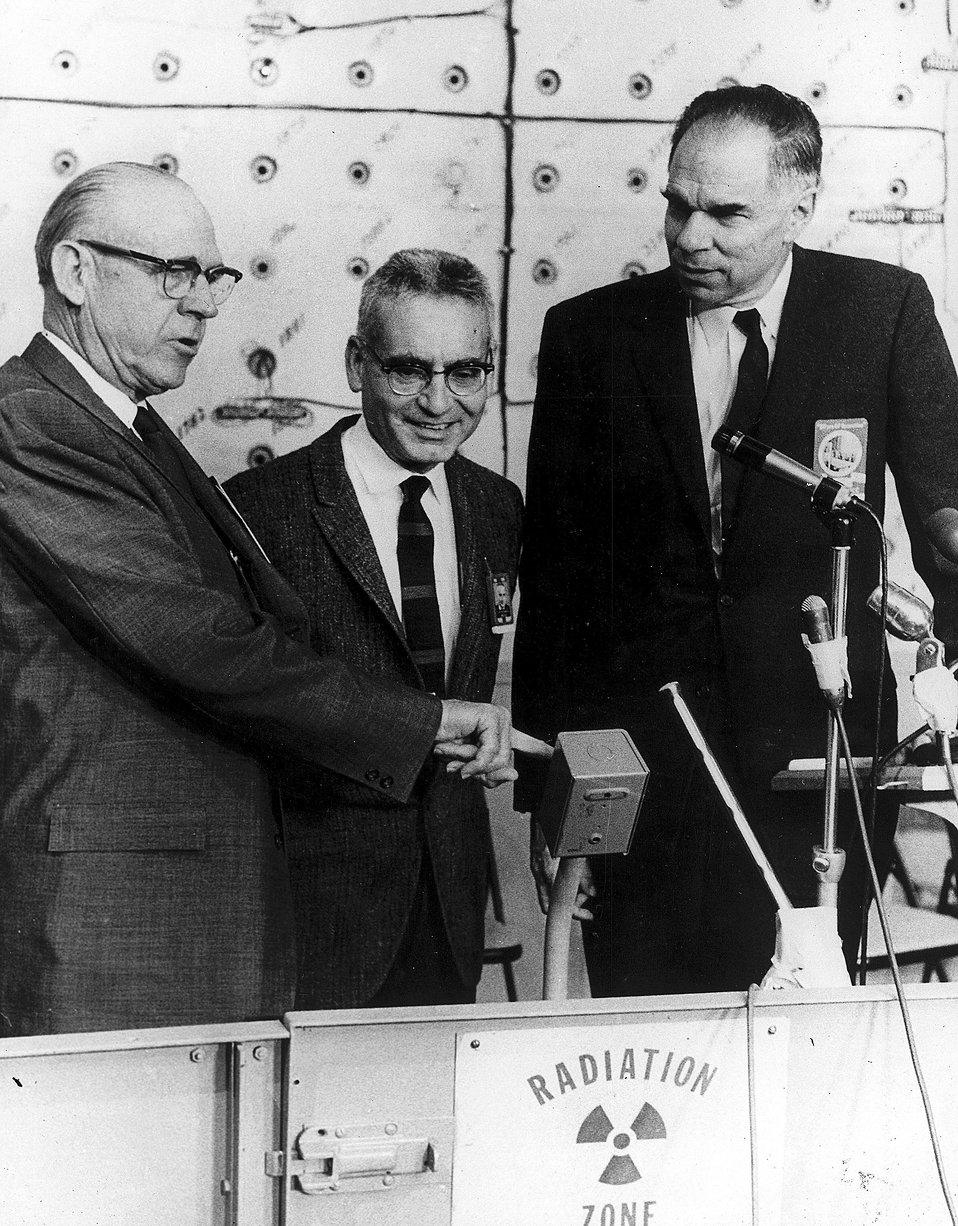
The Graphite Reactor at the AEC's Oak Ridge National Laboratory, Tennessee, was shut down for retirement on November 4, 1963, after 20 years of operation. Circa 1963.